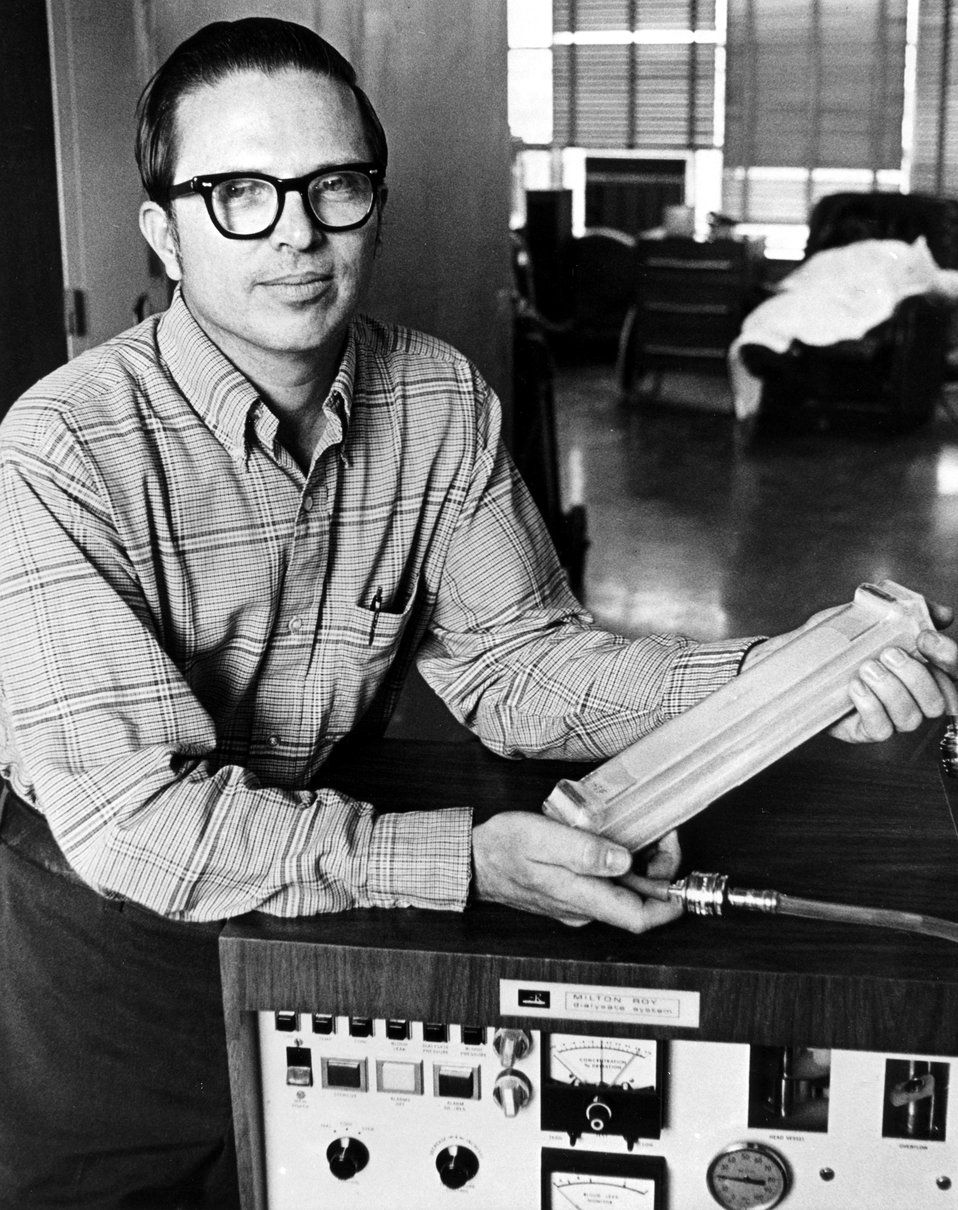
Finley Markley, Los Angeles, holds the artificial kidney he helped develop as an employee of the U.S. Atomic Energy Commission's Argonne (Illinois) National Laboratory. Circa 1973.